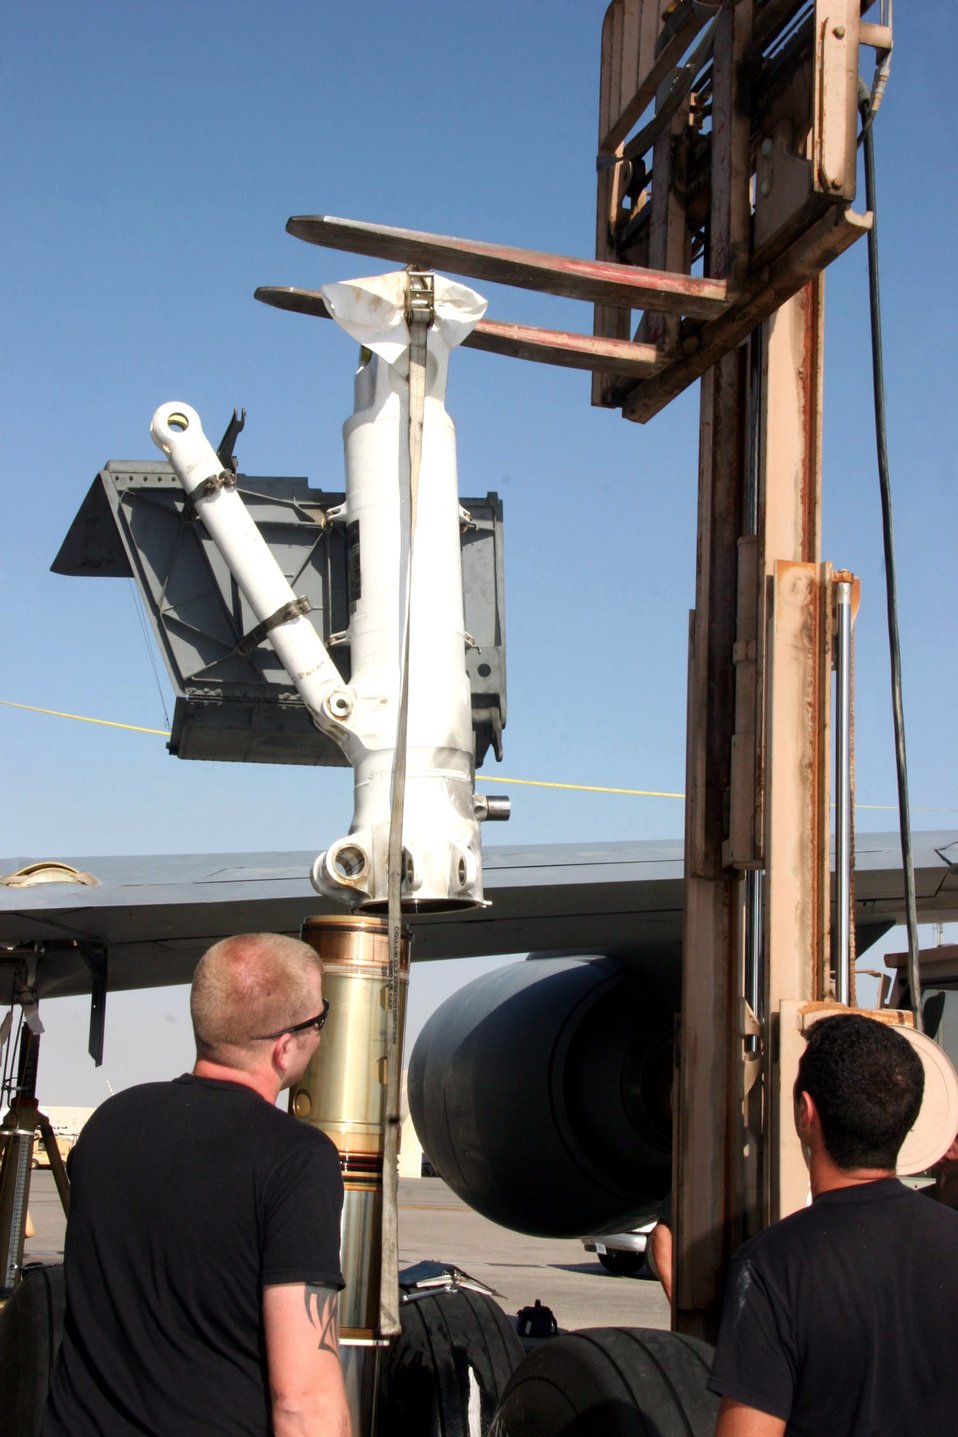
KC-135 strut change

Senior Airman Kyle Beisner (left) and Tech. Sgt. Eric Hunt spot Tech. Sgt. Jeremy Polk, the forklift driver, as he reinstalls a KC-135 Stratotanker landing gear strut Dec. 21. The Airmen are assigned to the 380th Expeditionary Aircraft Maintenance Squadron and deployed from the 22nd Aircraft Maintenance Squadron at McConnell Air Force Base, Kansas.